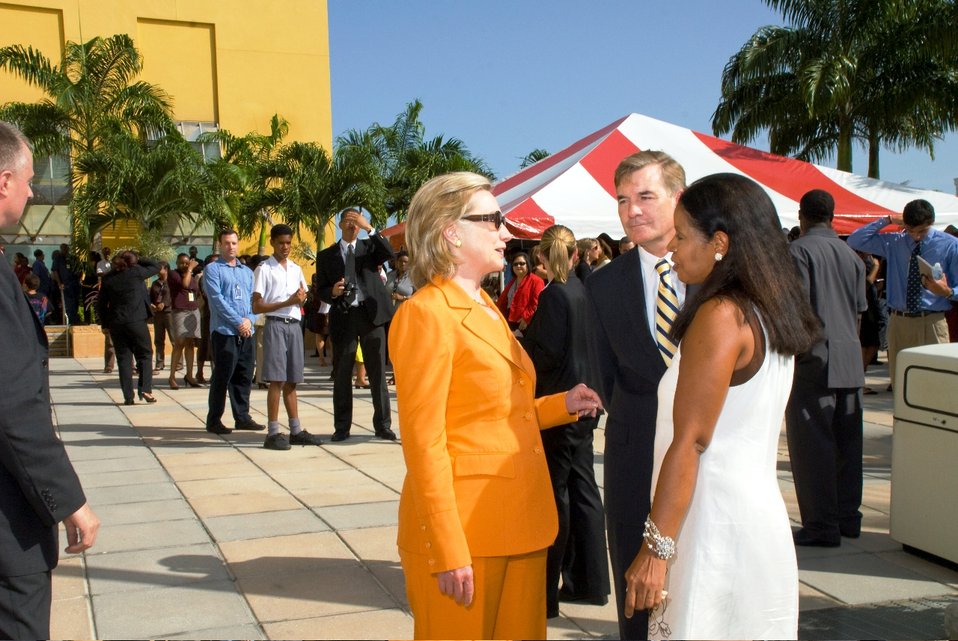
Secretary Clinton Meets With Chargé d’Affaires Dr. Brent and Saskia Hardt

U.S. Secretary of State Hillary Rodham Clinton meets with U.S. Embassy Barbados and Eastern Caribbean Chargé d’Affaires Dr. Brent Hardt and his wife, Saskia, at the U.S. Embassy Bridgetown in Barbados on June 10, 2010.